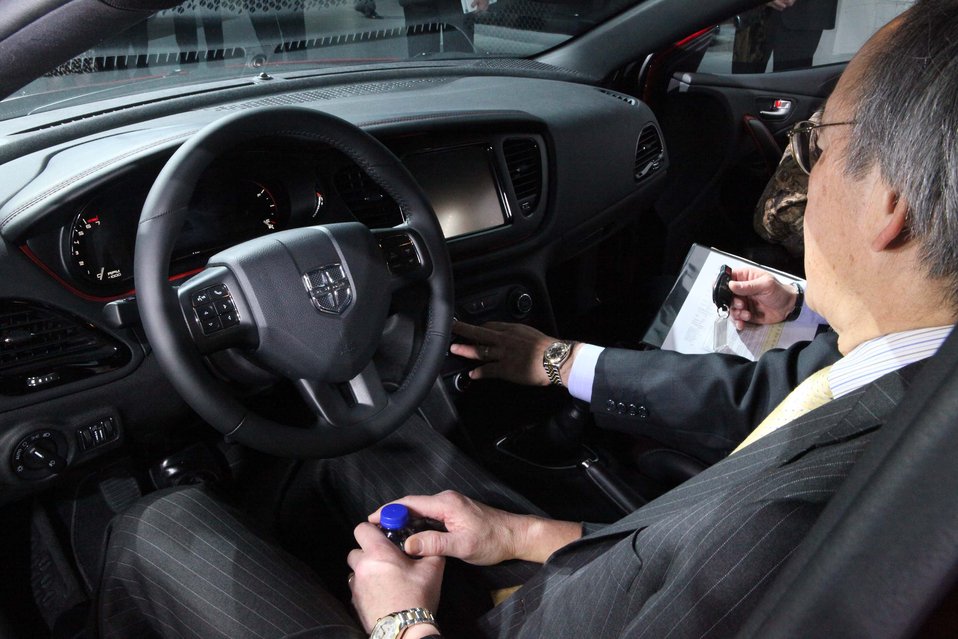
Energy Secretary Steven Chu inside the new 2013 Dodge Dart